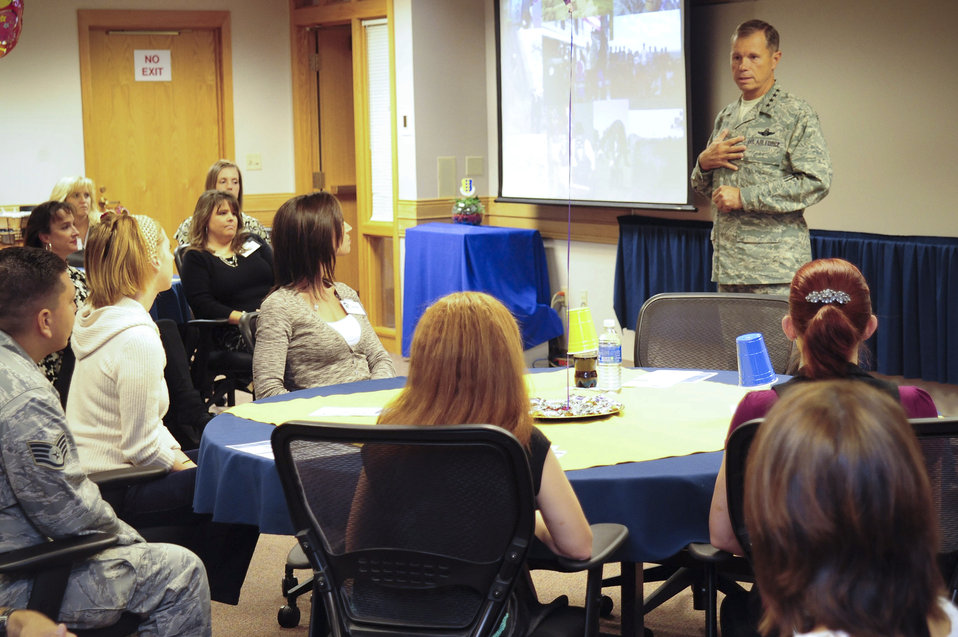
ACC commander visits Ellsworth

Gen. William M. Fraser III speaks to Heart Link spouses Sept. 1, 2010, at Ellsworth Air Force Base, S.D. General Fraser spoke about the Year of the Air Force Family and answered various questions from spouses. General Fraser is the commander of Air Combat Command.